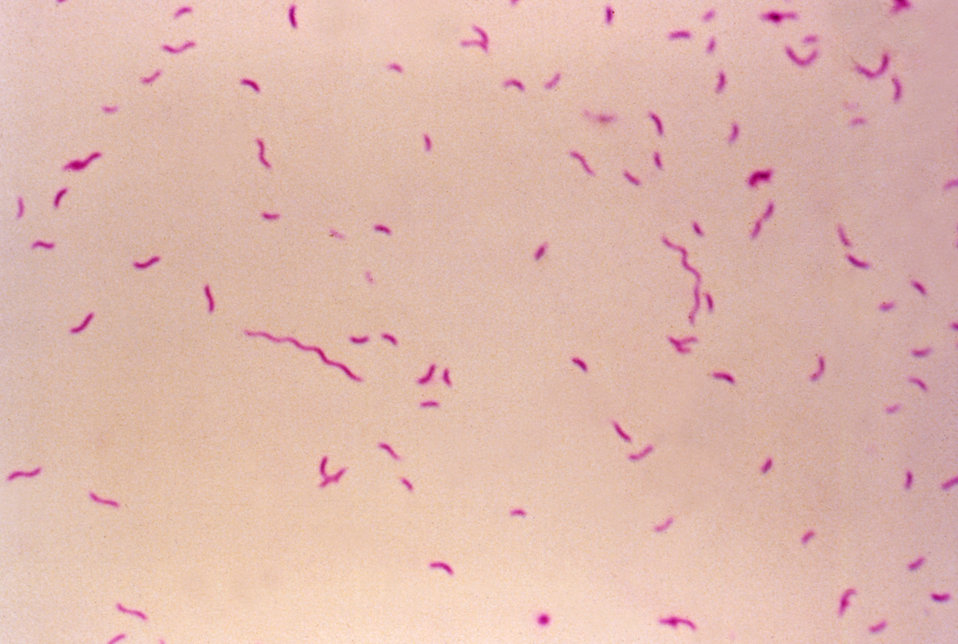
This Gram-stained image shows the spiral rods of Campylobacter fetus subsp. fetus taken from an 18hr brain-heart infusion, and a 7% addition of rabbit blood agar plate culture.